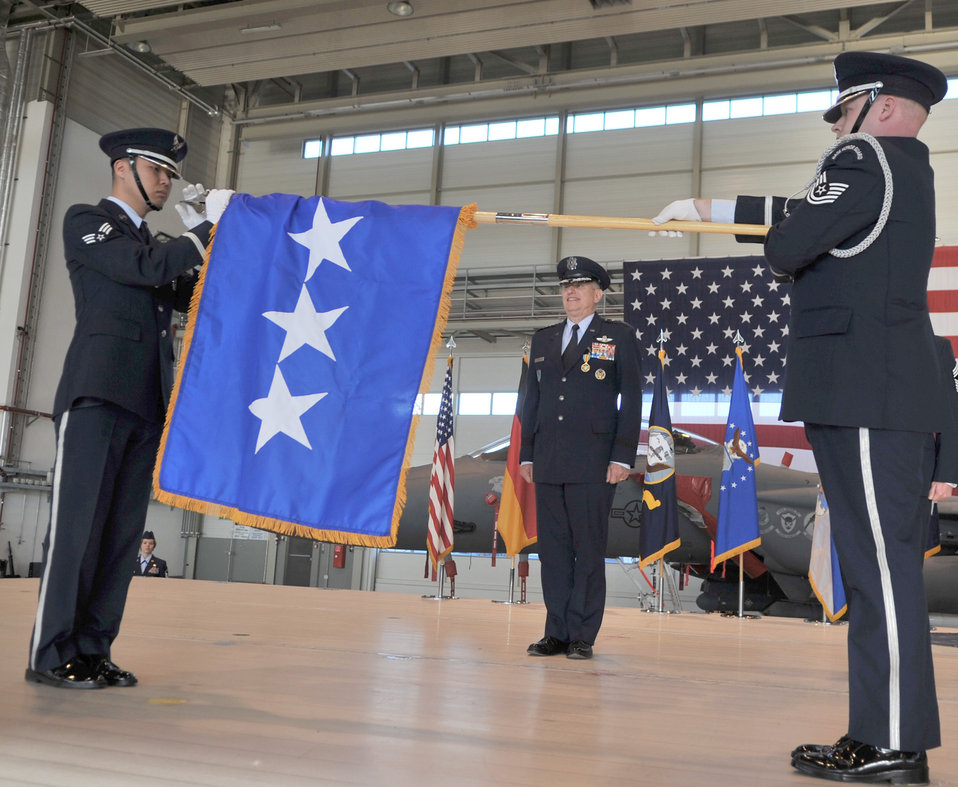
Gen. Mark A. Welsh III takes command of USAFE

Gen. Roger A. Brady watches his flag furl during his retirement ceremony after relinquishing command of U.S. Air Forces in Europe Dec. 13, 2010, at Ramstein Air Base, Germany.